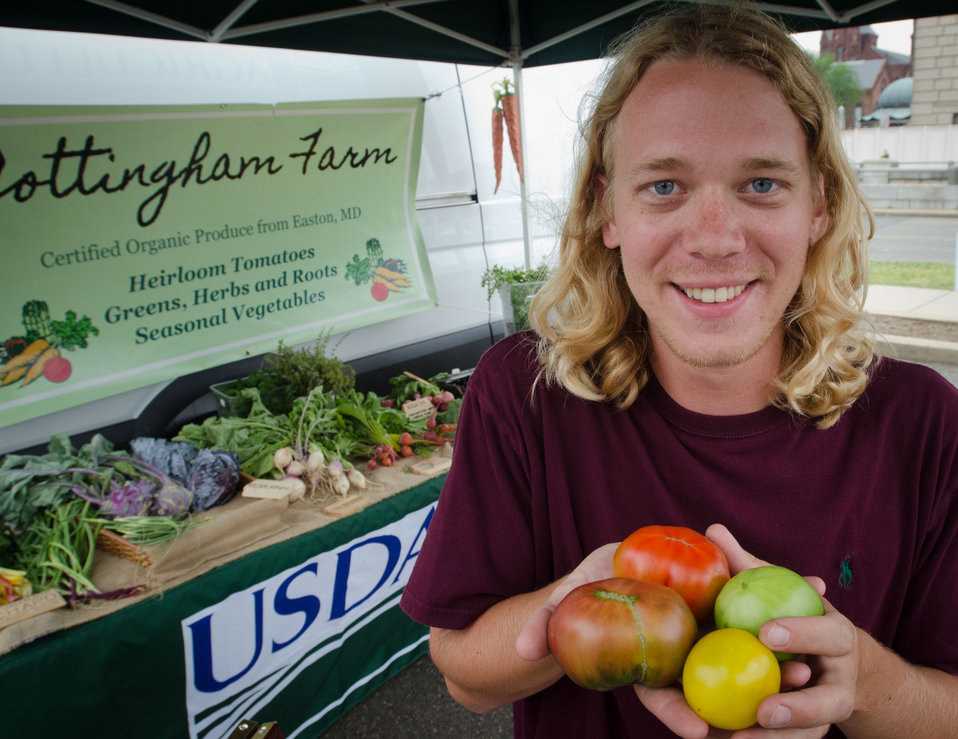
Cottingham Farm's Shane Shewbridge shows off some organic heirloom tomatoes at the U.S. Department of Agriculture (USDA) summer farmers market opening of its 17th season at the USDA Whitten Building east parking lot in Washington, D.C., on Friday, May 31, 2012. This year's theme is Grow, Healthy, Eat Healthy and Be Healthy. USDA and Fuel Up to Play 60, in partnership with the National Dairy Council and the National Football League, invited residence, visitors and local school children to participate in opening day activities. Hip Hop Public Health featuring Easy A.D. from Cold Crush Brothers and disk jockey Artie Green play music and invite people to get up on stage to dance or hula hoop to get active. D.C. Truck Farm helps people know from what plants, herbs, fruit and produce come from by giving tail-gate tours of the garden growing in the bed of their pickup truck. The Peoples Garden Initiative and USDA Executive Master Gardeners gave away a variety of fruit and produce seedlings to include the ‘Abraham Lincoln’ Tomato in celebration of the USDA 150th Anniversary and to share their harvest. New features for 2012 include an on-site sign language interpreter, a hand washing station, and a USDA-certified organic vendor. Other products selling today are fresh fruits, vegetables, herbs, baked goods, meats, kettle popcorn, local honey, hand-made soap and more.